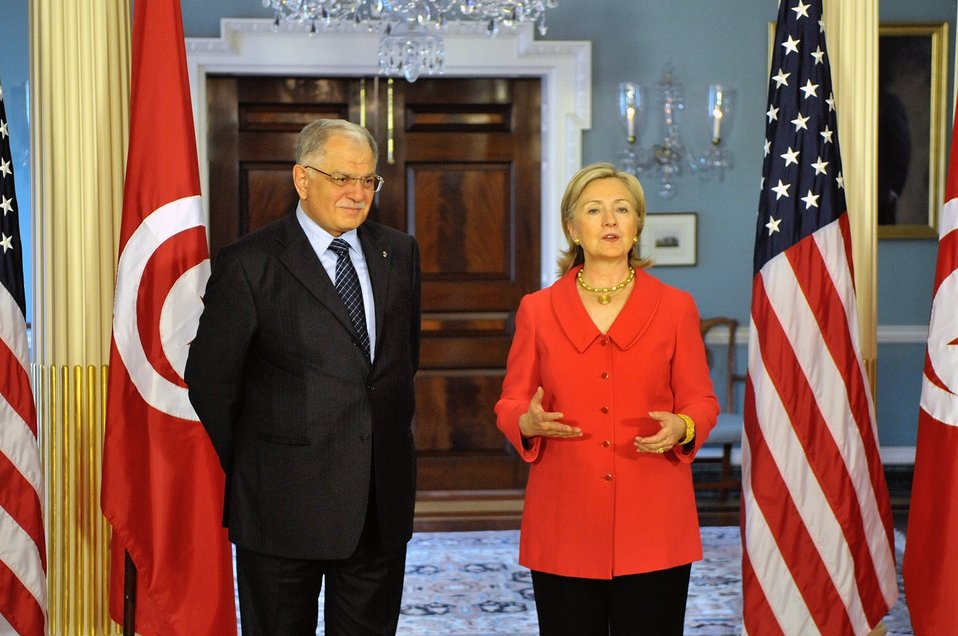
Secretary Clinton Hosts Bilateral Meeting With Tunisian Foreign Minister Morjane

U.S. Secretary of State Hillary Rodham Clinton hosts a bilateral meeting with Tunisian Foreign Minister Kamel Morjane in the Treaty Room at the U.S. Department of State, Washington, DC, April 28, 2010.